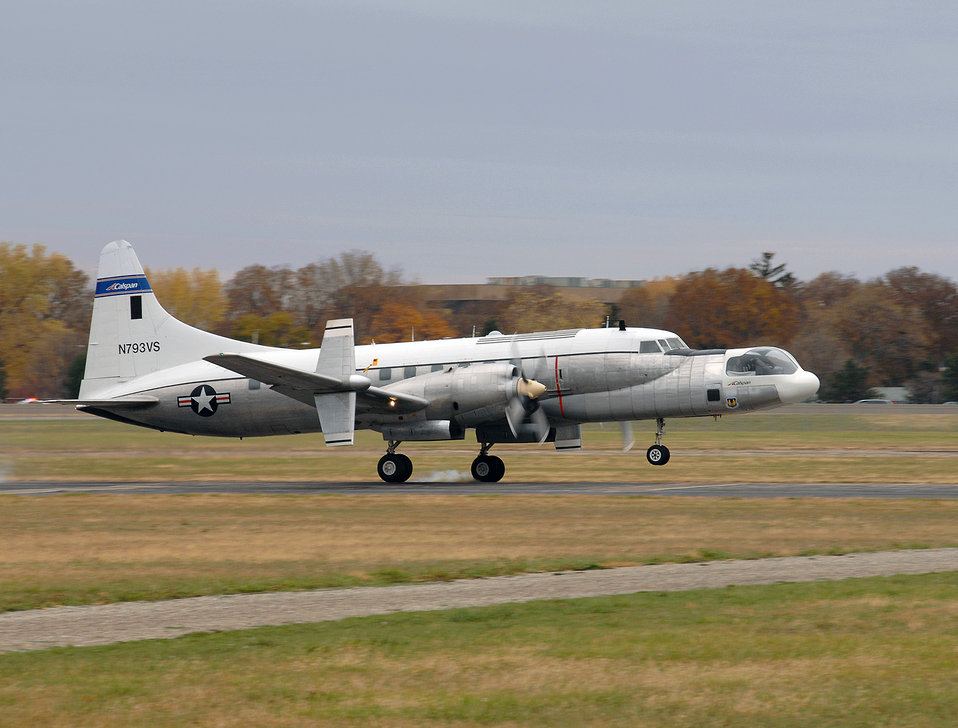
In-Flight Simulator's last flight

The U.S. Air Force C-131 known as the Total-In-Flight Simulator made its final flight to the National Museum of the United States Air Force at Wright-Patterson Air Force Base, Ohio, Nov. 7. The unusual aircraft flew some 2,500 research flights and contributed to the advancement of many of the flight technologies integral to today's fleet. Prior to its retirement, the TIFS, a 1955 Convair, was the oldest operating aircraft in the Air Force inventory.